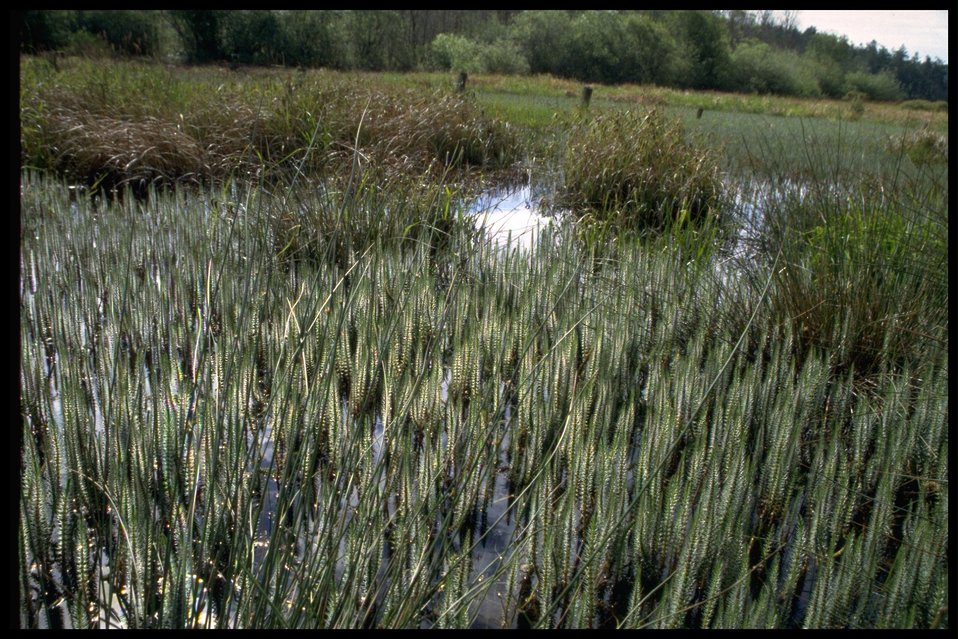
Chadwick Hill Marsh.